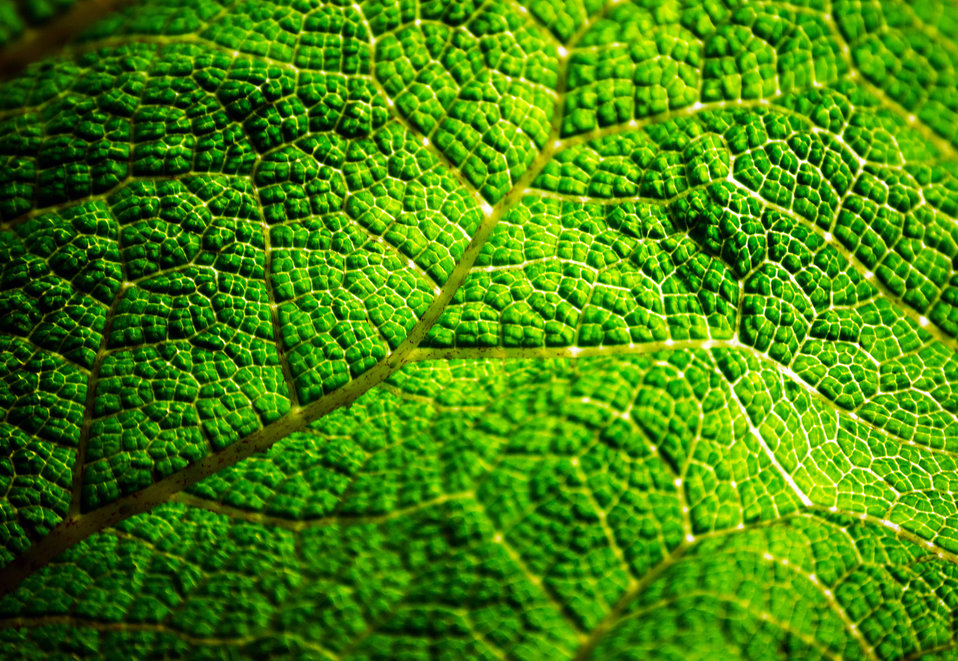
Green leaf.